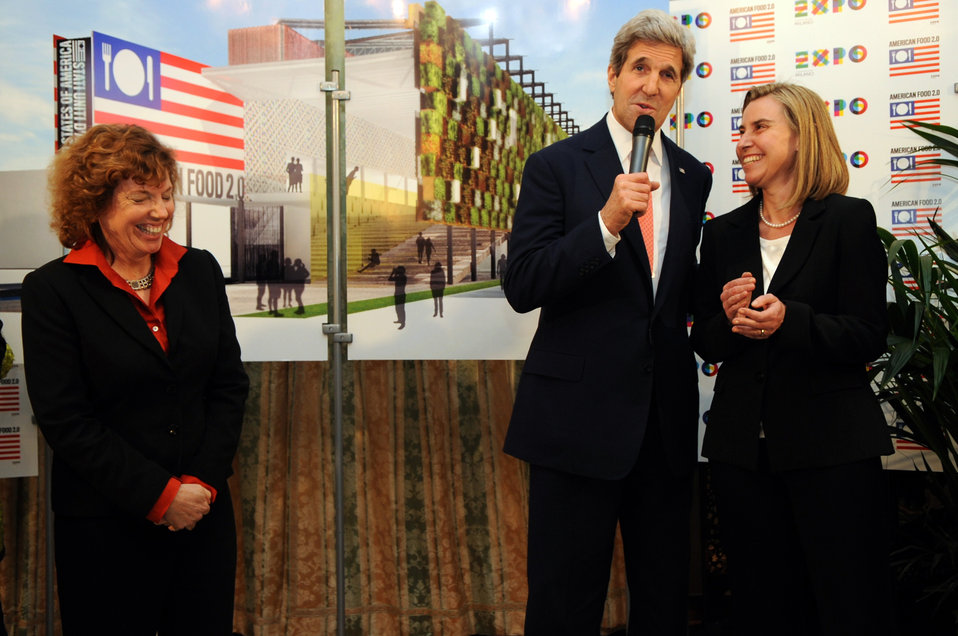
Secretary Kerry and Italian Foreign Minister Mogherini Share a Laugh

U.S. Secretary of State John Kerry, flanked by Embassy Rome Deputy Chief of Mission Kathleen Doherty, jokes with Italian Foreign Minister Federica Mogherini as both highlight an upcoming U.S. food pavilion at the Milan Expo 2015 during an appearance in Rome, Italy, on March 27, 2014.